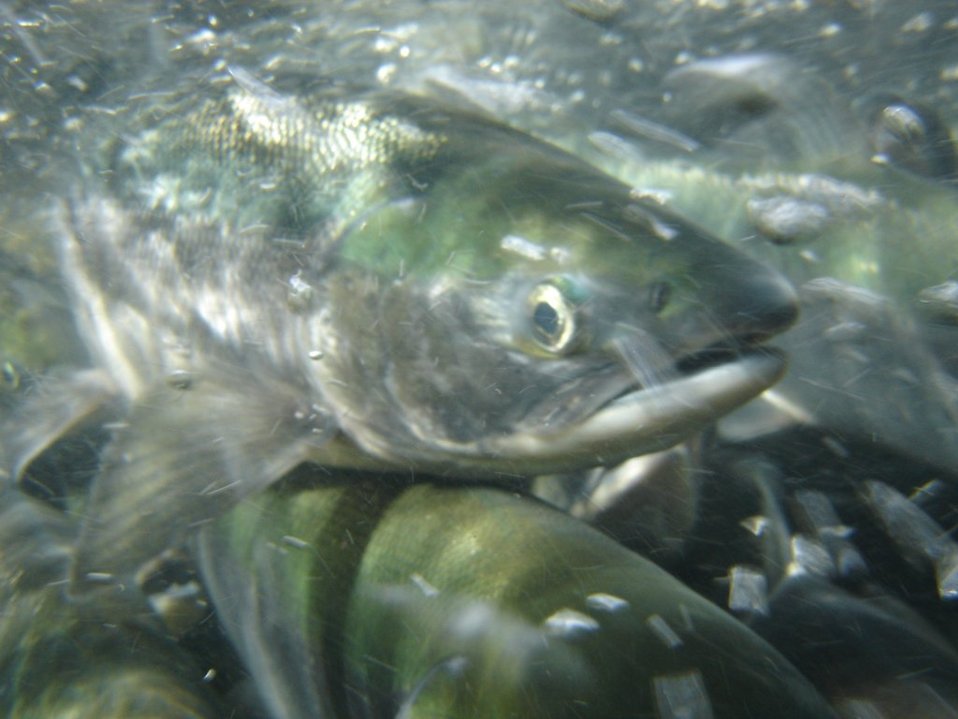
Salmon Sockeye school

Sockeye salmon swim upstream in Yakutat, AK.